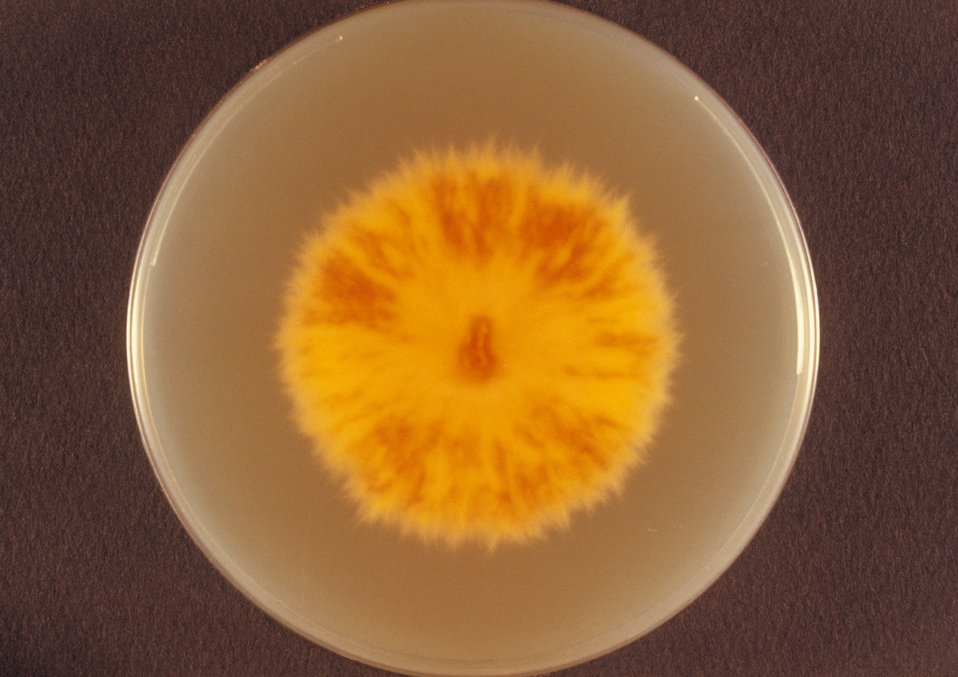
This is the bottom or 'reverse' view of a Sabouraud's dextrose plate culture growing the fungus Microsporum persicolor.